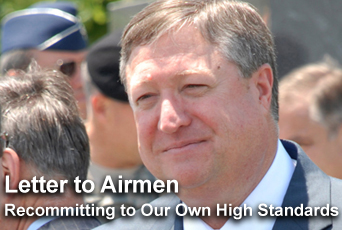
'Letter to Airmen' recommits to high standards

In his first Letter to Airmen, acting Secretary of the Air Force Michael B. Donley emphasizes the Air Force recommitment to high standards.